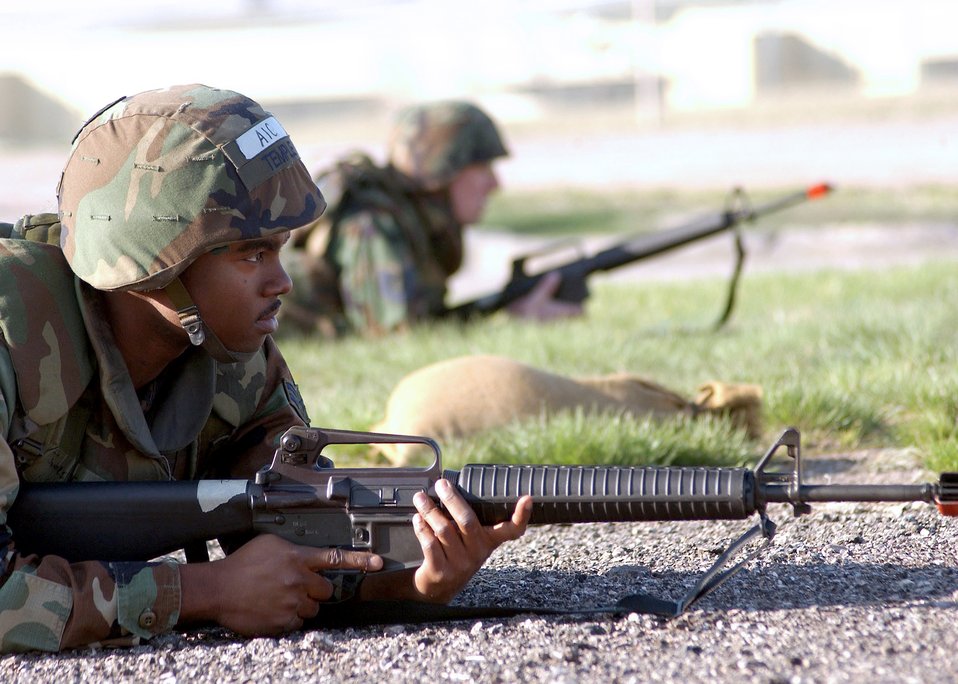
Take cover!

ELLSWORTH AIR FORCE BASE, S.D. -- Airman 1st Class James Temple takes cover during a simulated attack here April 18. The 28th Civil Engineer Squadron Airmen participate in convoy training to prepare for upcoming deployments.